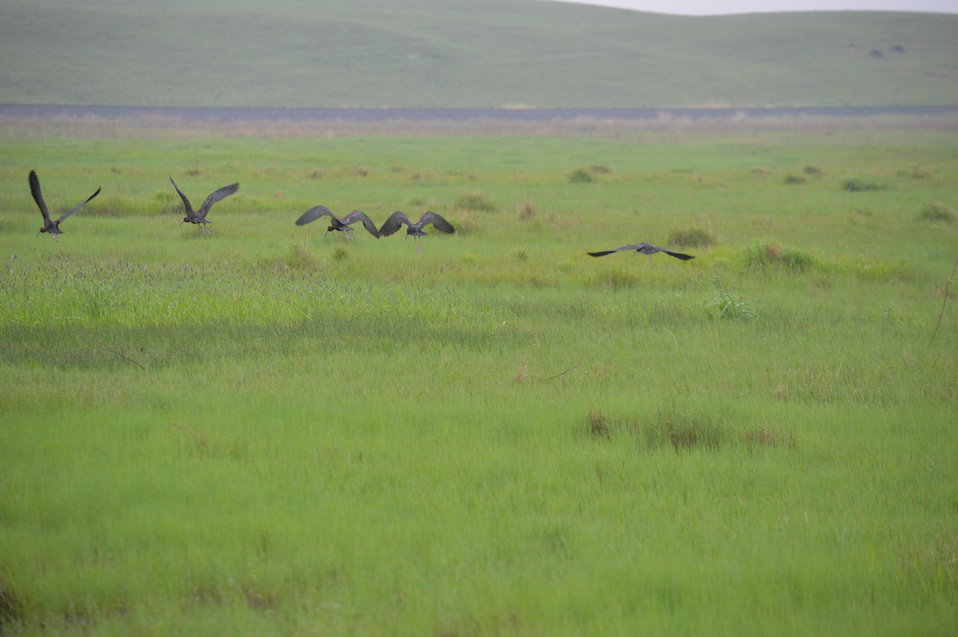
Birds in flight

Scenery and wildlife at Lost Lake National Wildlife Refuge in North Dakota.